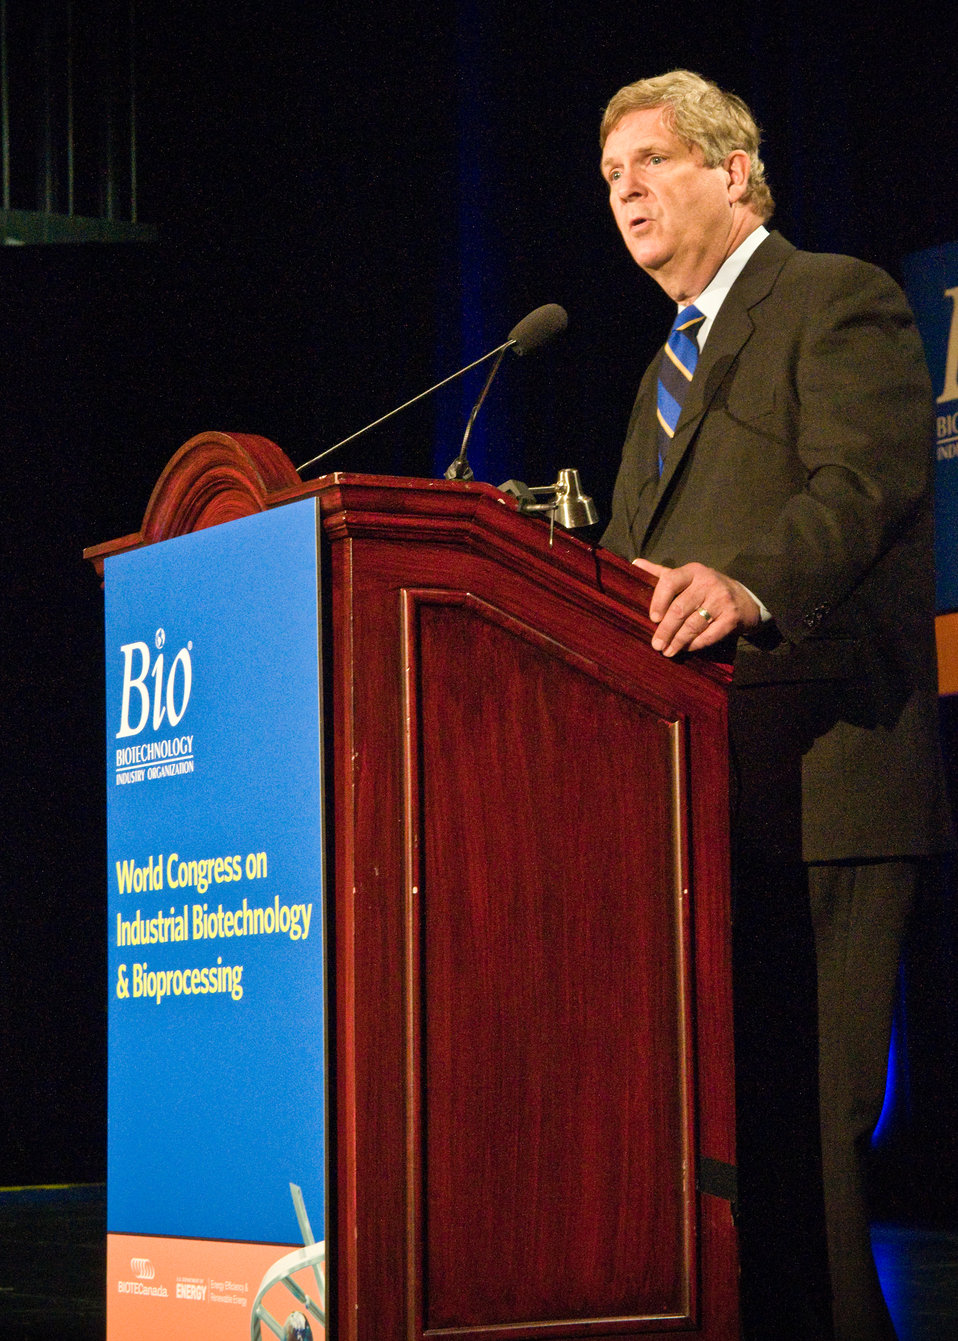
Agriculture Secretary Tom Vilsack spoke at the plenary general session, “The Marriage of Industrial and Agricultural” at the Bio – Biotechnology Industry Organization sponsored by The World Congress on Industrial Biotechnology and Bioprocessing at the National Harbor, DC on Tuesday, June 29, 2010. Secretary Vilsack discussed the partnership and cooperation of the federal government and private industry in developing biotechnology for farm, fuel and industry. USDA Photo 10di1423-042.